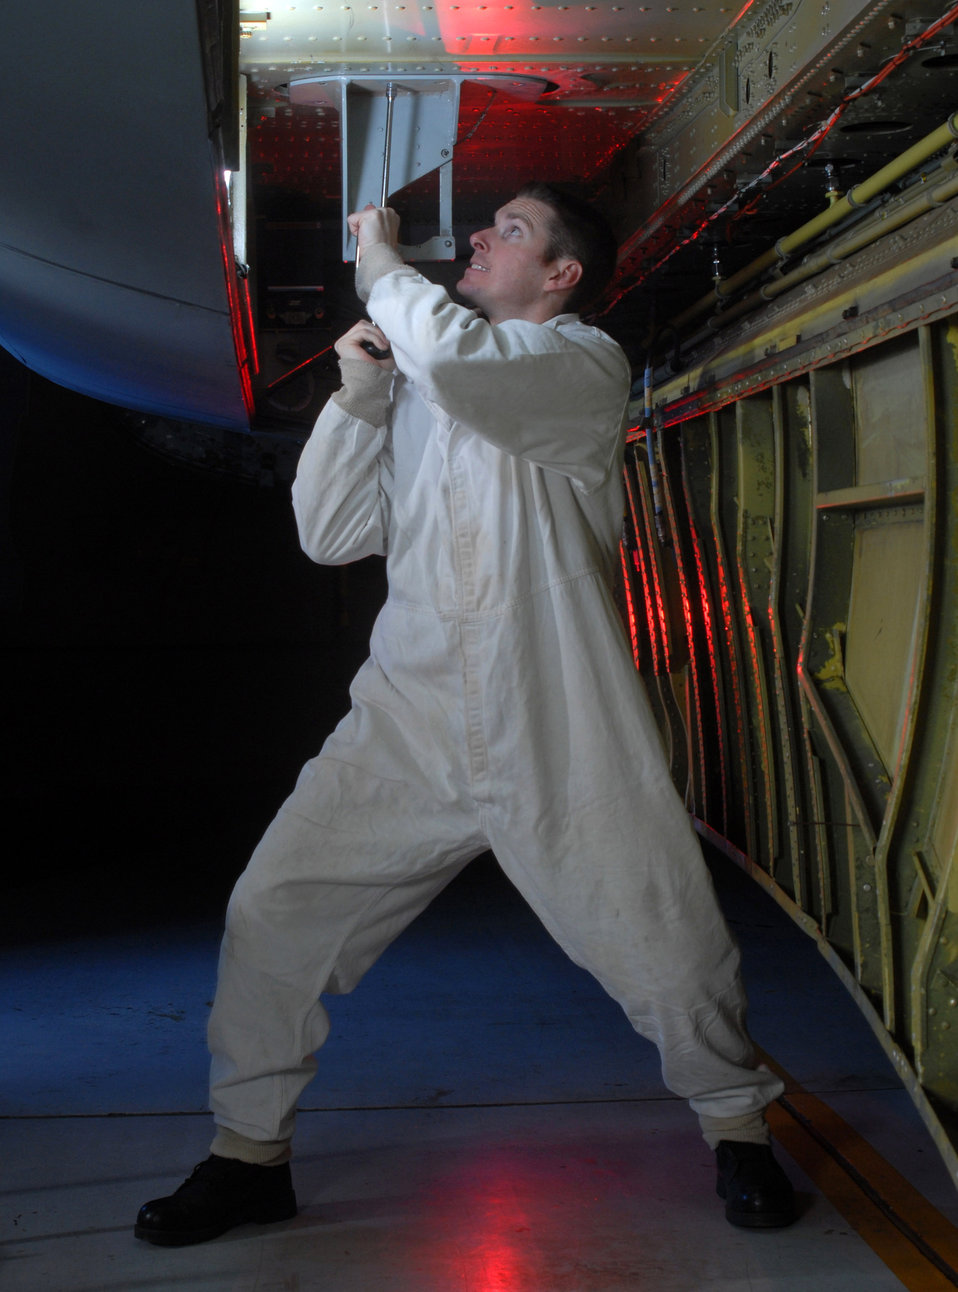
By the book

Staff Sgt. Ryan Slanina uses a speed handle to open the center wing fuel tank of a KC-135 Stratotanker during an inspection Jan. 9 at March Air Reserve Base, Calif. Sergeant Slanina is a fuel cell technician from the 452nd Maintenance Squadron.